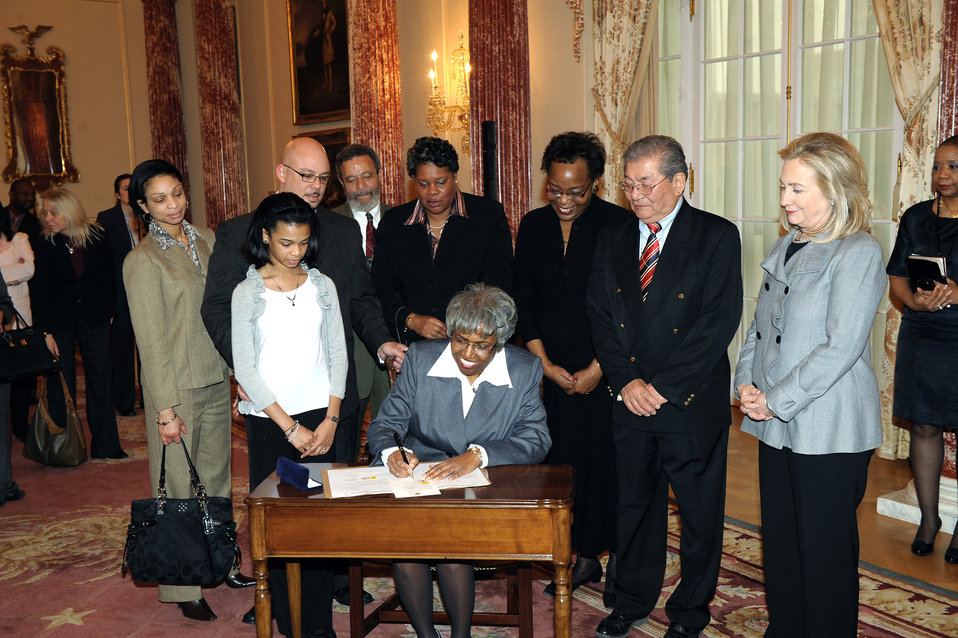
Secretary Clinton Holds a Swearing-In Ceremony for Joyce Barr as Assistant Secretary

U.S. Secretary of State Hillary Rodham Clinton holds a swearing-in ceremony for Joyce Barr as Assistant Secretary of State for Administration at the U.S. Department of State in Washington, D.C., on February 8, 2012.